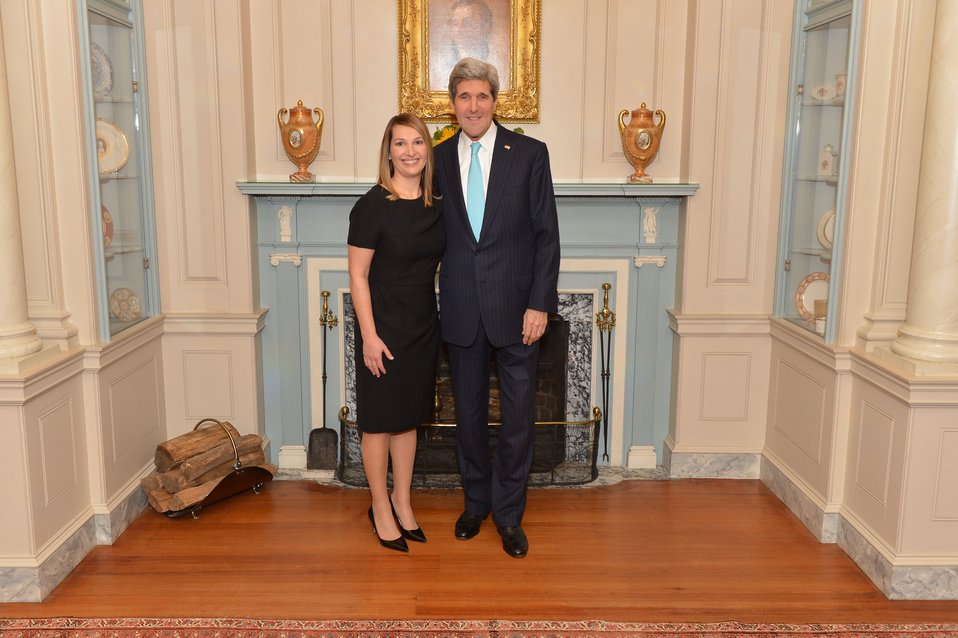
Secretary Kerry Poses for a Photo with Deputy Secretary Higginbottom

U.S. Secretary of State John Kerry poses for a photo with Heather Higginbottom before swearing her in as the Deputy Secretary of State for Management and Resources, at the U.S. Department of State in Washington, D.C., on January 30, 2014.